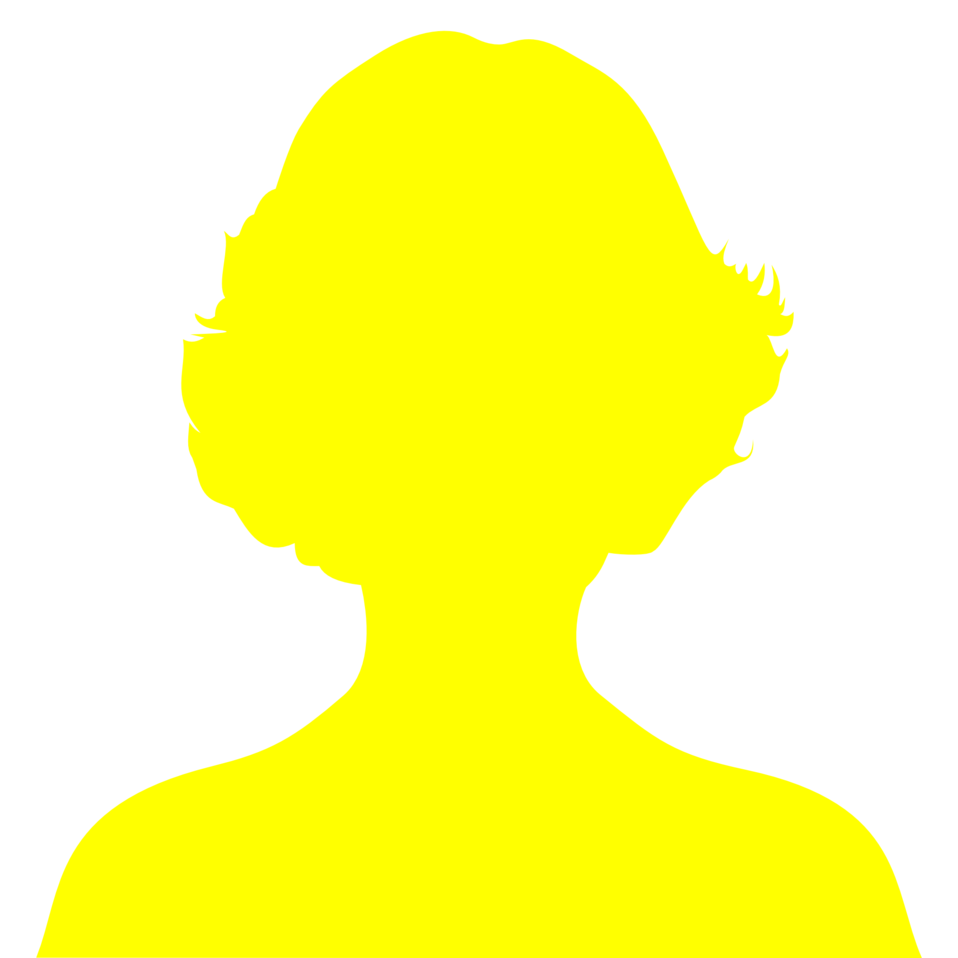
Placeholder image female (yellow).